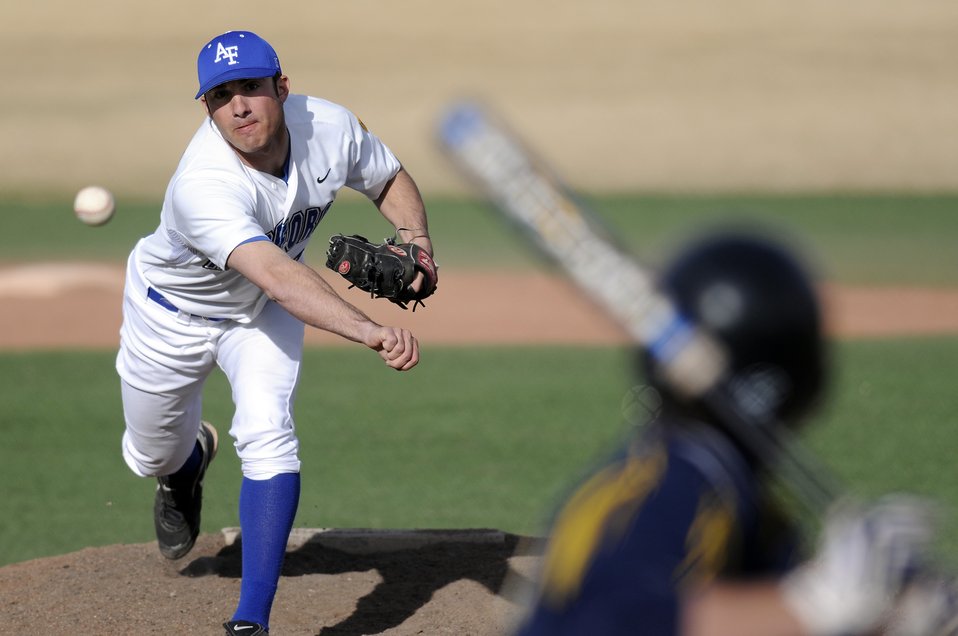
US Air Force Academy, CO

Freshman relief pitcher Matt Barattino faces a batter during the 11-7 win against Colorado Christian at Falcon Field March 17. After surrendering a base hit to the first batter he faced, Barattino retired seven-consecutive batters to finish the game. The win improved the Falcons record to 6-9 on the season. Air Force returns to action with a three-game series at UNLV starting Friday, March 20.